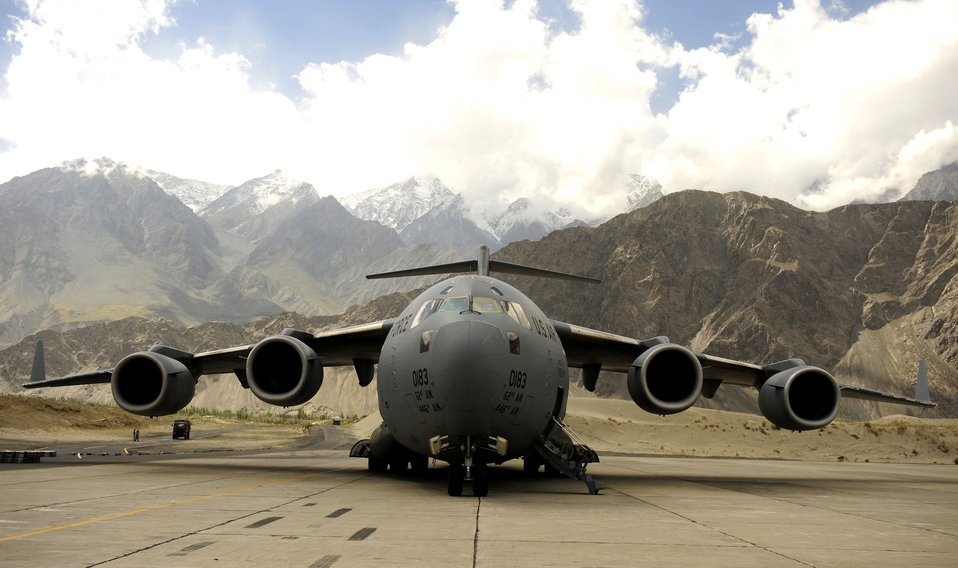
Taking a breather

A C-17 Globemaster III assigned to the 816th Expeditionary Airlift Squadron waits on the flightline at Skardu Airfield, Pakistan, Sept. 24, 2010, before crews unload 16 pallets stacked with bags of flour in support of flood relief efforts.